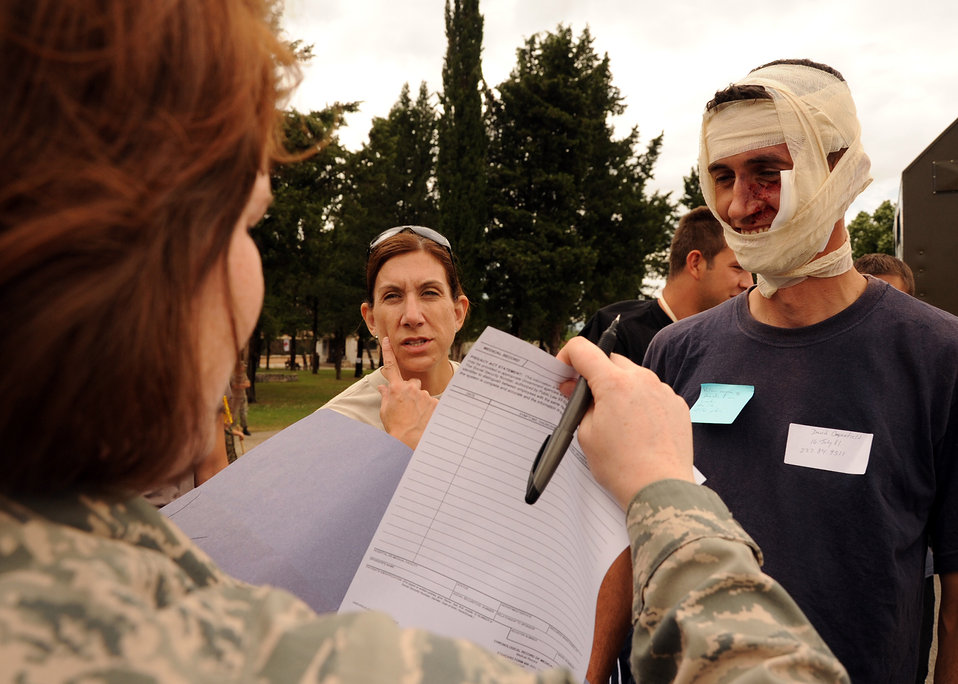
SR12

U.S. Air Force Capt. Jill Lemieux, middle, explains an injury to U.S. Air Force Staff Sgt. Grace Smith, during Shared Resilience 2012 at Capljina, Bosnia-Herzegovina, June 5, 2012. More than 500 military members from nine nations are participating in Shared Resilience 2012, an annual U.S. Joint Chiefs of Staff-sponsored exercise, May 28 through June 8. Lemieux is a triage nurse and Smith is a patient tracking technician.